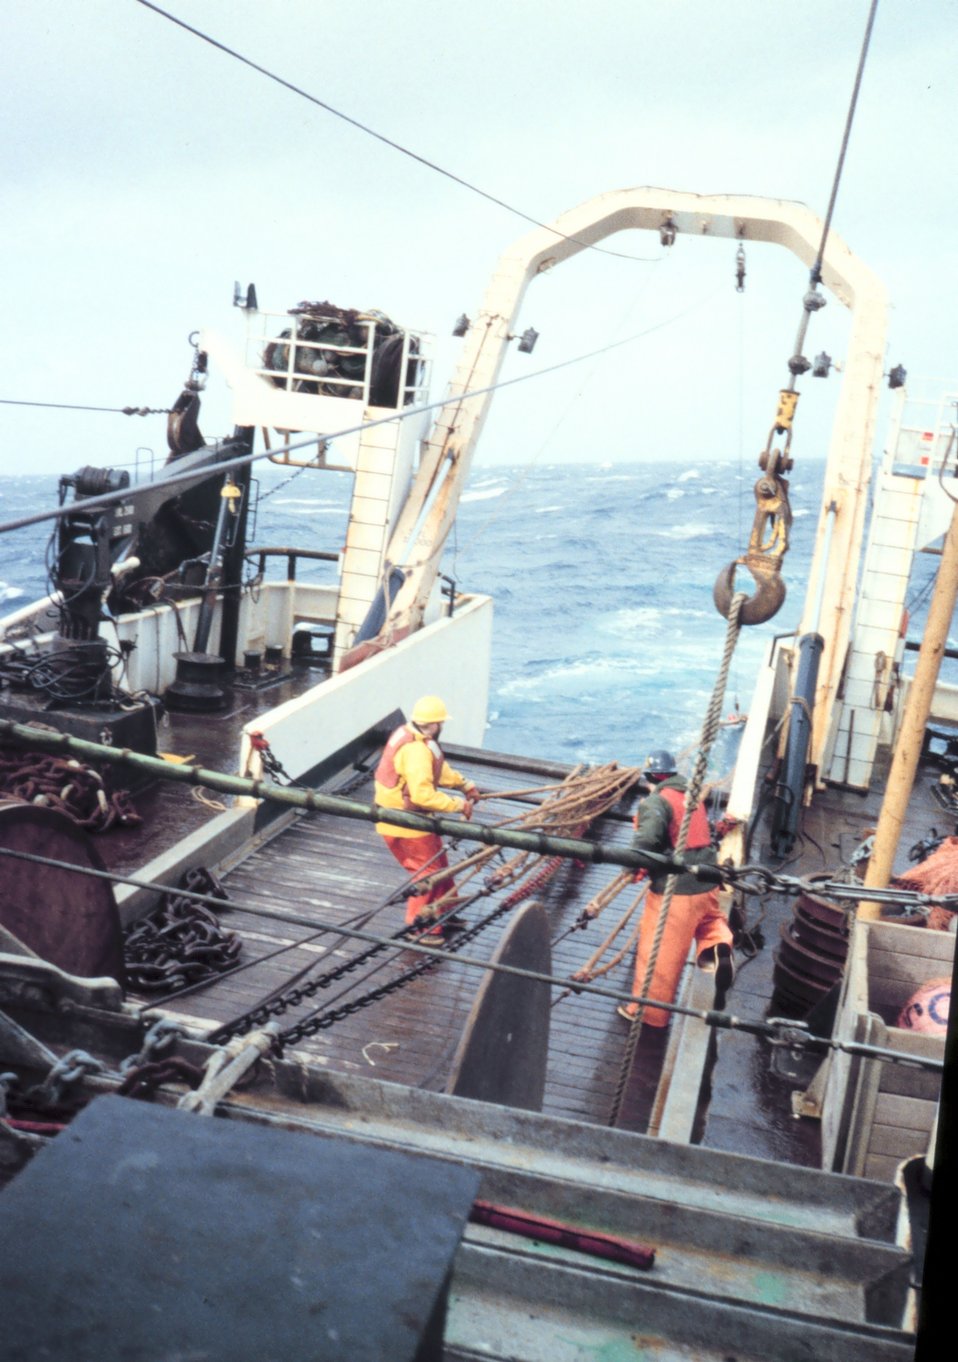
Beginning of haulback of net at the end of a trawl.